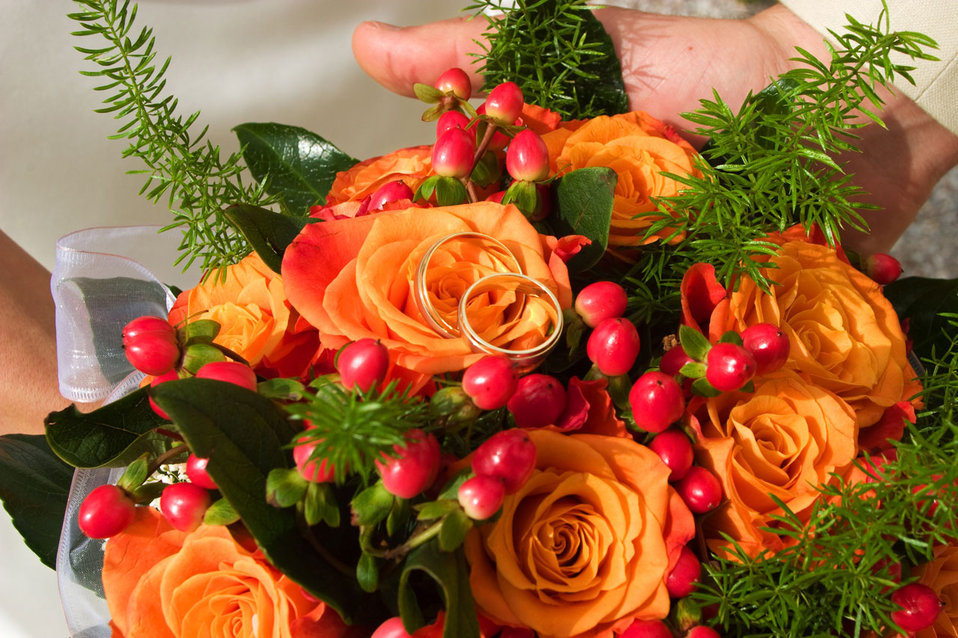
Flowers

Wedding bouquet with wedding rings on it..